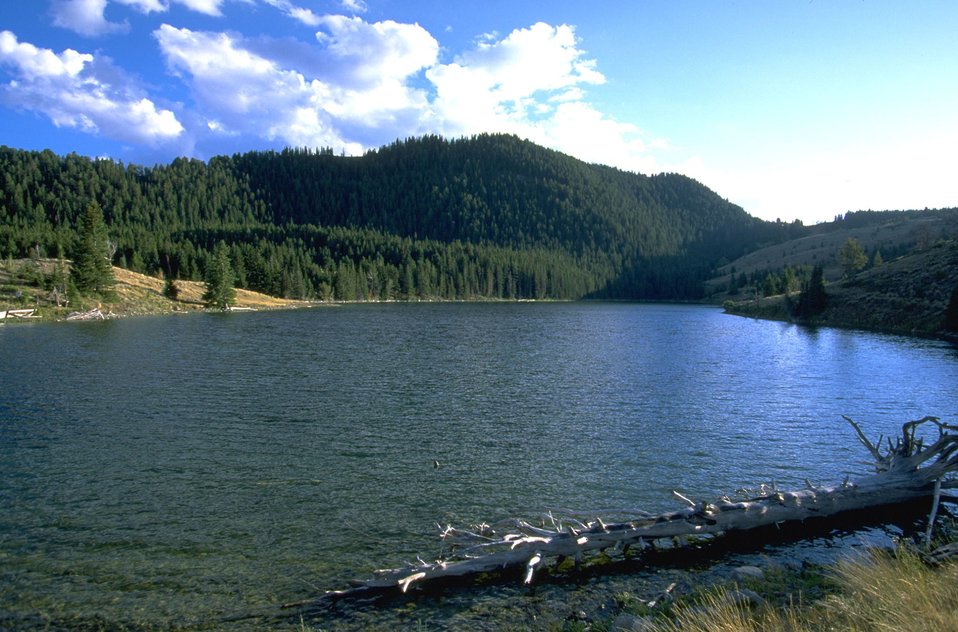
Dead tree in lake